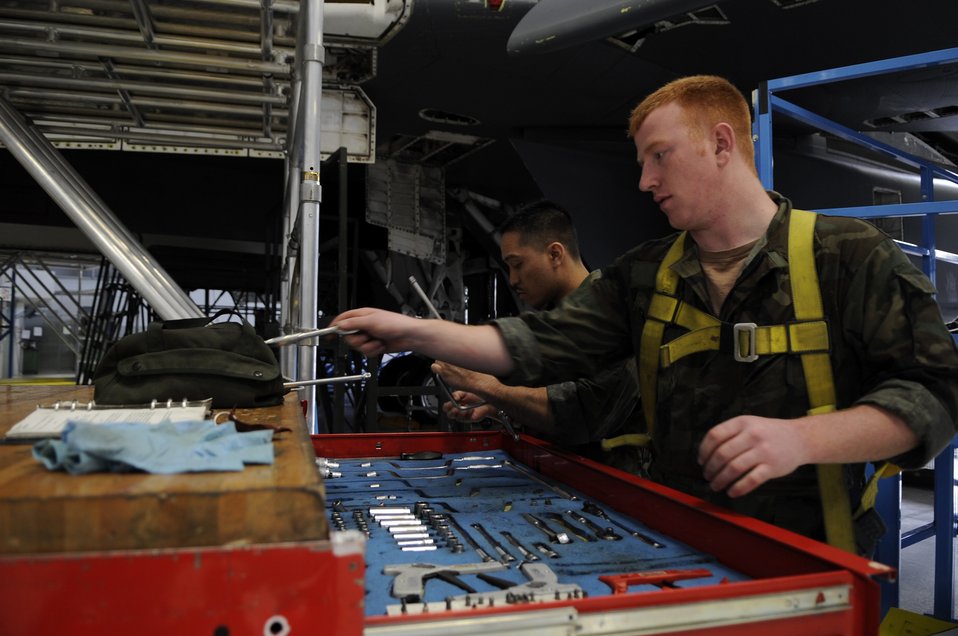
Sniper pod improves capabilities, lethality of B-1

Airman 1st Class Eric Smith and Staff Sgt. Walter Nogra gather tools to perform maintenance on a B-1B Lancer at Ellsworth Air Force Base, S.D., March 19. Airman Smith and Sergeant Nogra are assigned to 28th Maintenance Squadron at Ellsworth AFB.